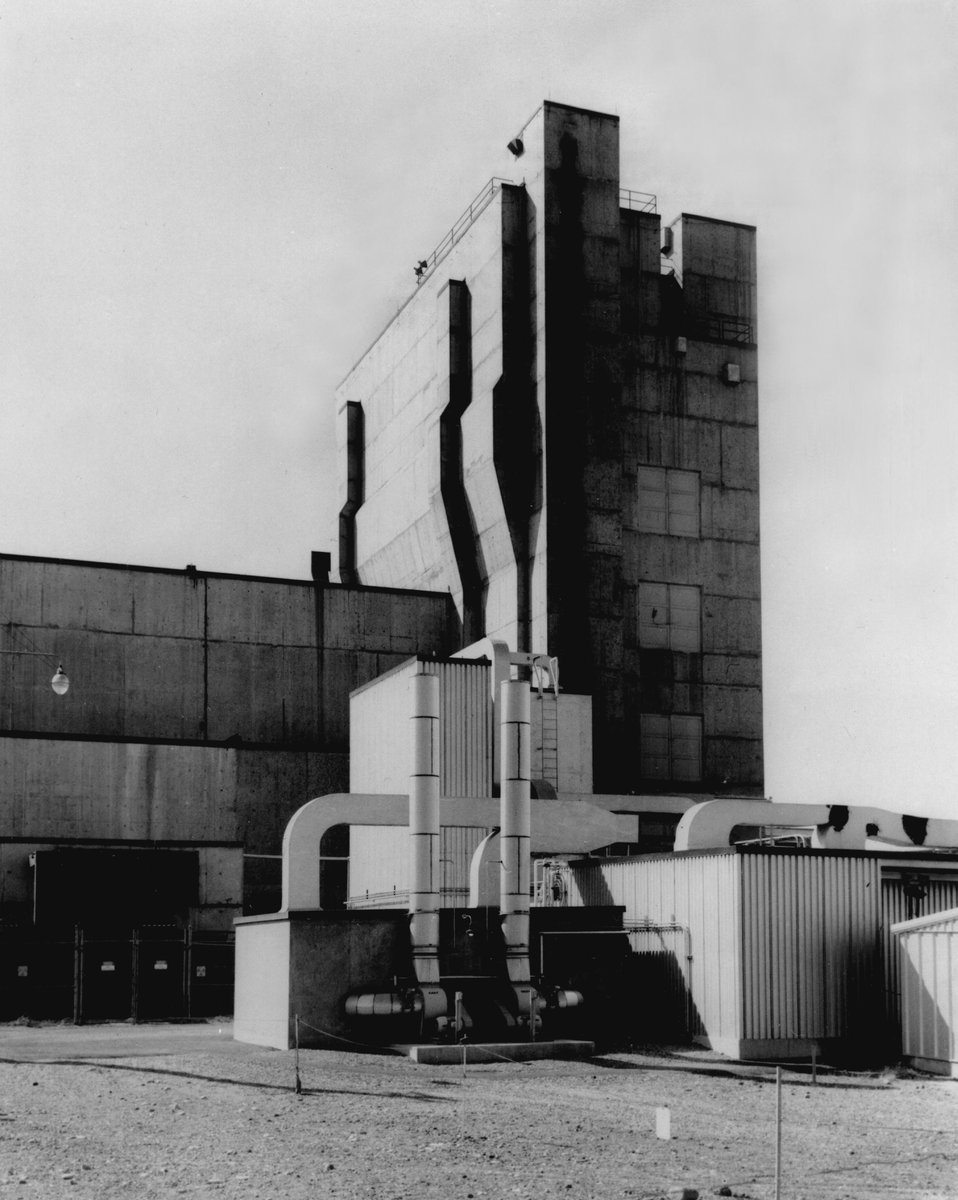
The world's first solvent-extraction processing building is the Redox building at the AEC's Hanford Project. The plant was retired and placed on a stand-by status in 1967. Circa 1968.